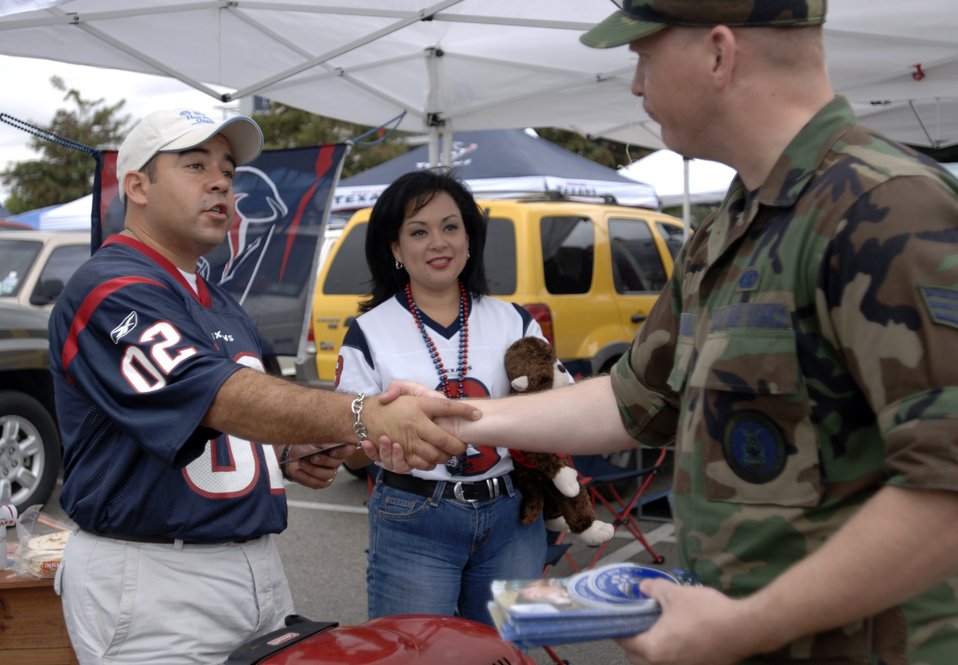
Servicemembers shine during NFL game

Senior Airman Dylan Bolander talks about the Air Force with Houston Texans fans' Dominic and Chantella Villareal during tailgating activities before the Houston Texans and Washington Redskins game at Reliant Stadium in Houston Sept 24. The game was designated as the Houston Texans' Salute to the Military day by team officials.